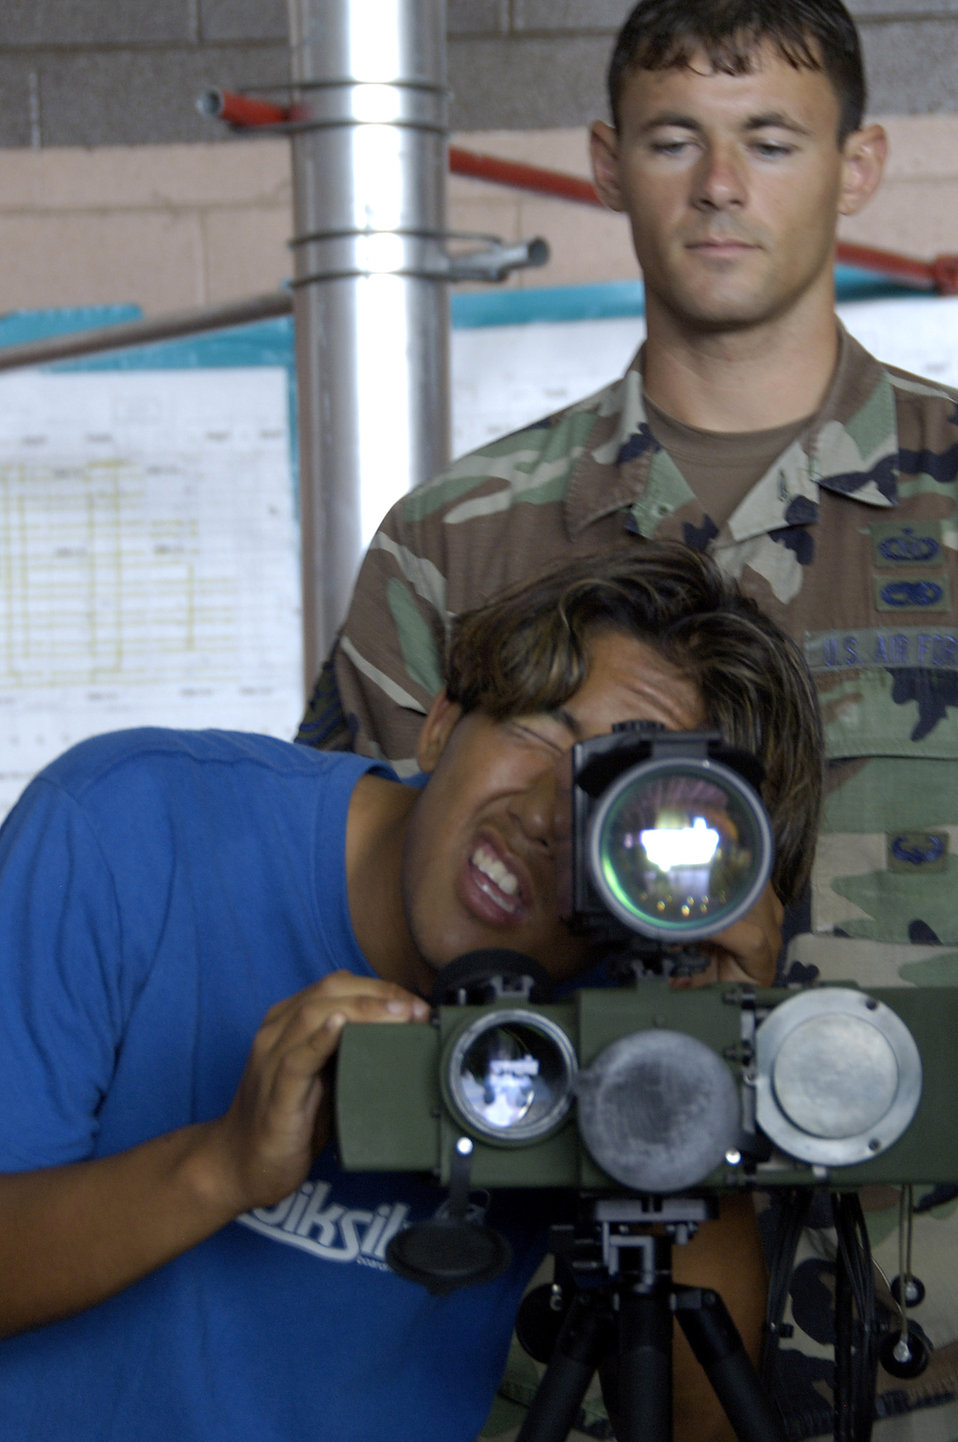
Hickam hosts Education Day

Tech. Sgt. Steve Reedy explains how to operate the laser target designator to Cotton Takaesu during Air Force Education Day at Hickam Air Force Base, Hawaii, Sept. 13. Members of 13th Air Force hosted the day for Hawaii public school math and science students as part of Air Force Week Honolulu. Sergeant Reedy is with the 25th Air Support Operations Squadron.